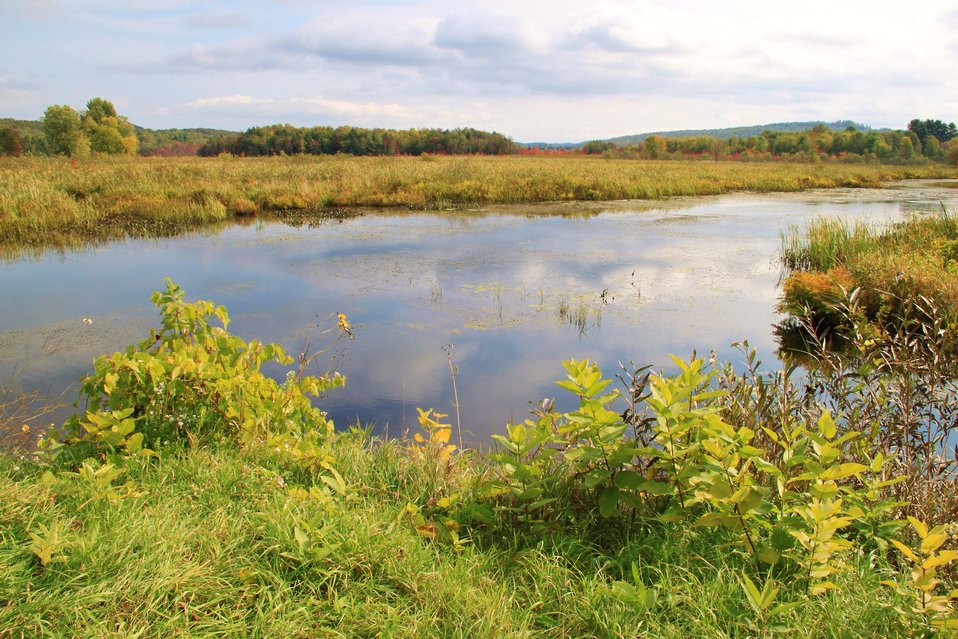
Eagle Point

Wetland complex at the new Eagle Point Unit of Missisquoi NWR. This unit is being managed under a cooperative agreement with the Vermont Fish and Wildlife Department.